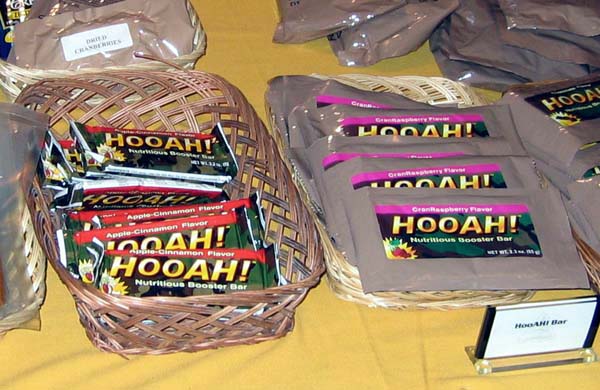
Hooah

FILE PHOTO -- The